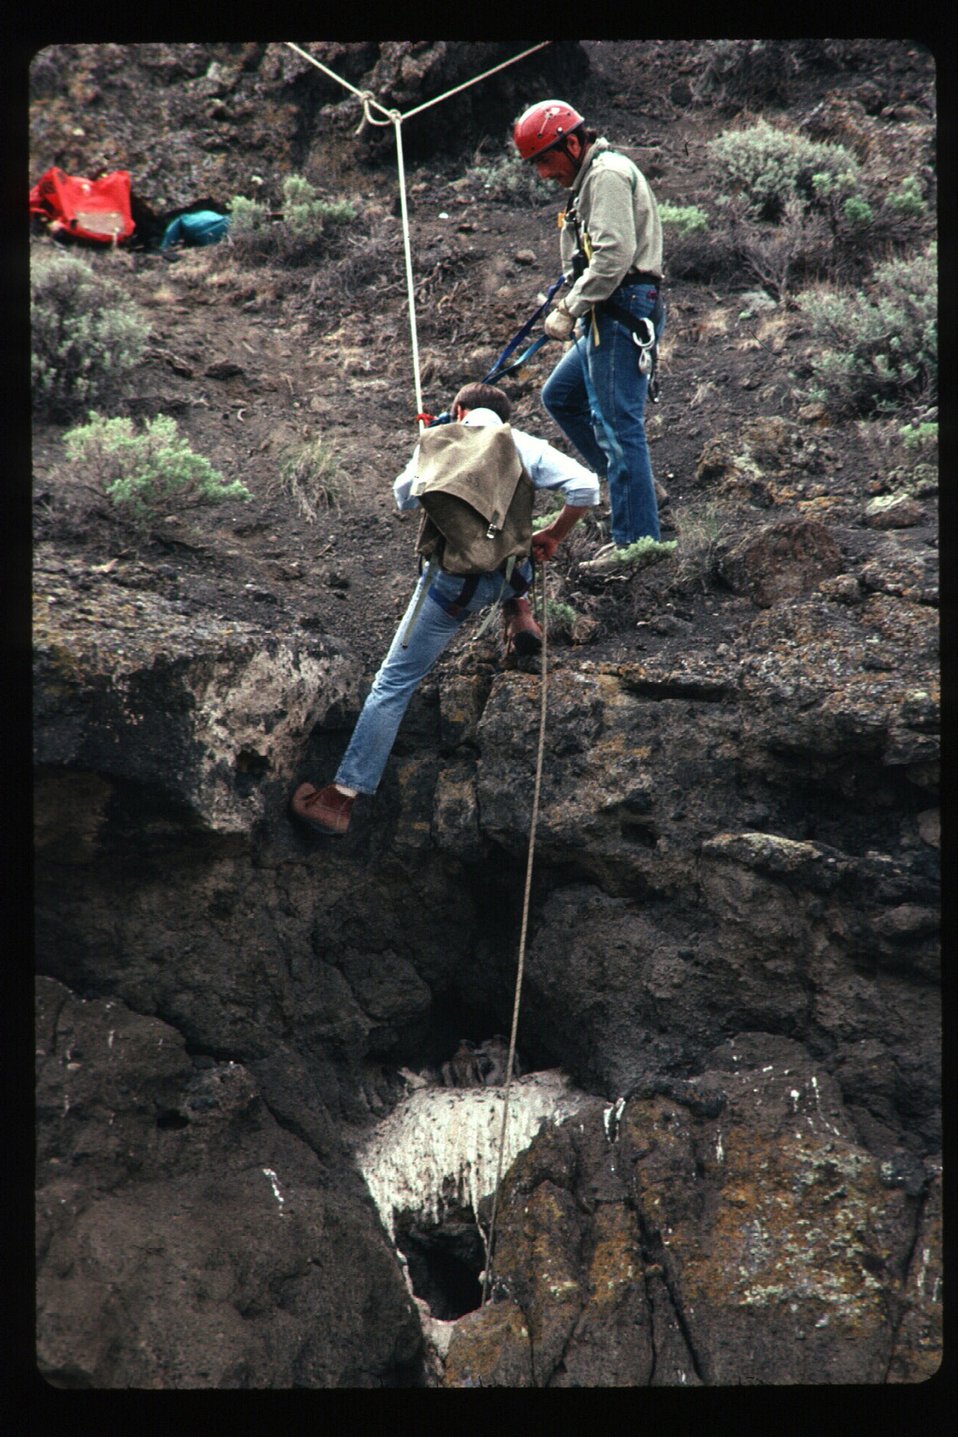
Researcher climbing to Prairie Falcon Nest Birds of Prey National Conservation Area BOP NCA Owyhee Field Office LSRD Lower Snake River District